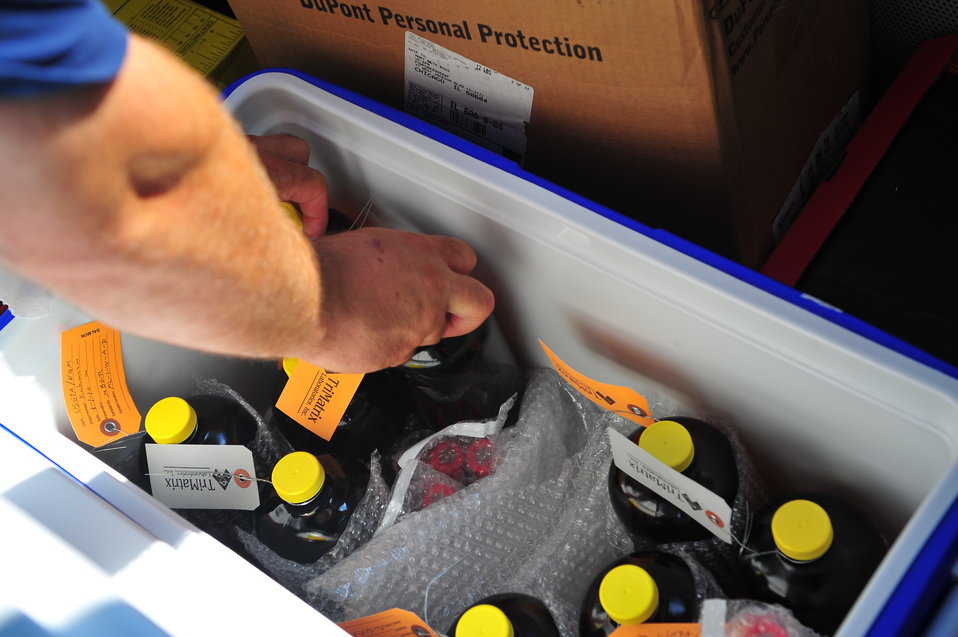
EPA's response to the Enbridge oil spill

August 2, 2010 - Water and sediment sampling operations during Enbridge Spill Response on Morrow Lake near Battle Creek, Michigan from Mudpuppy II, EPA's news research vessel.